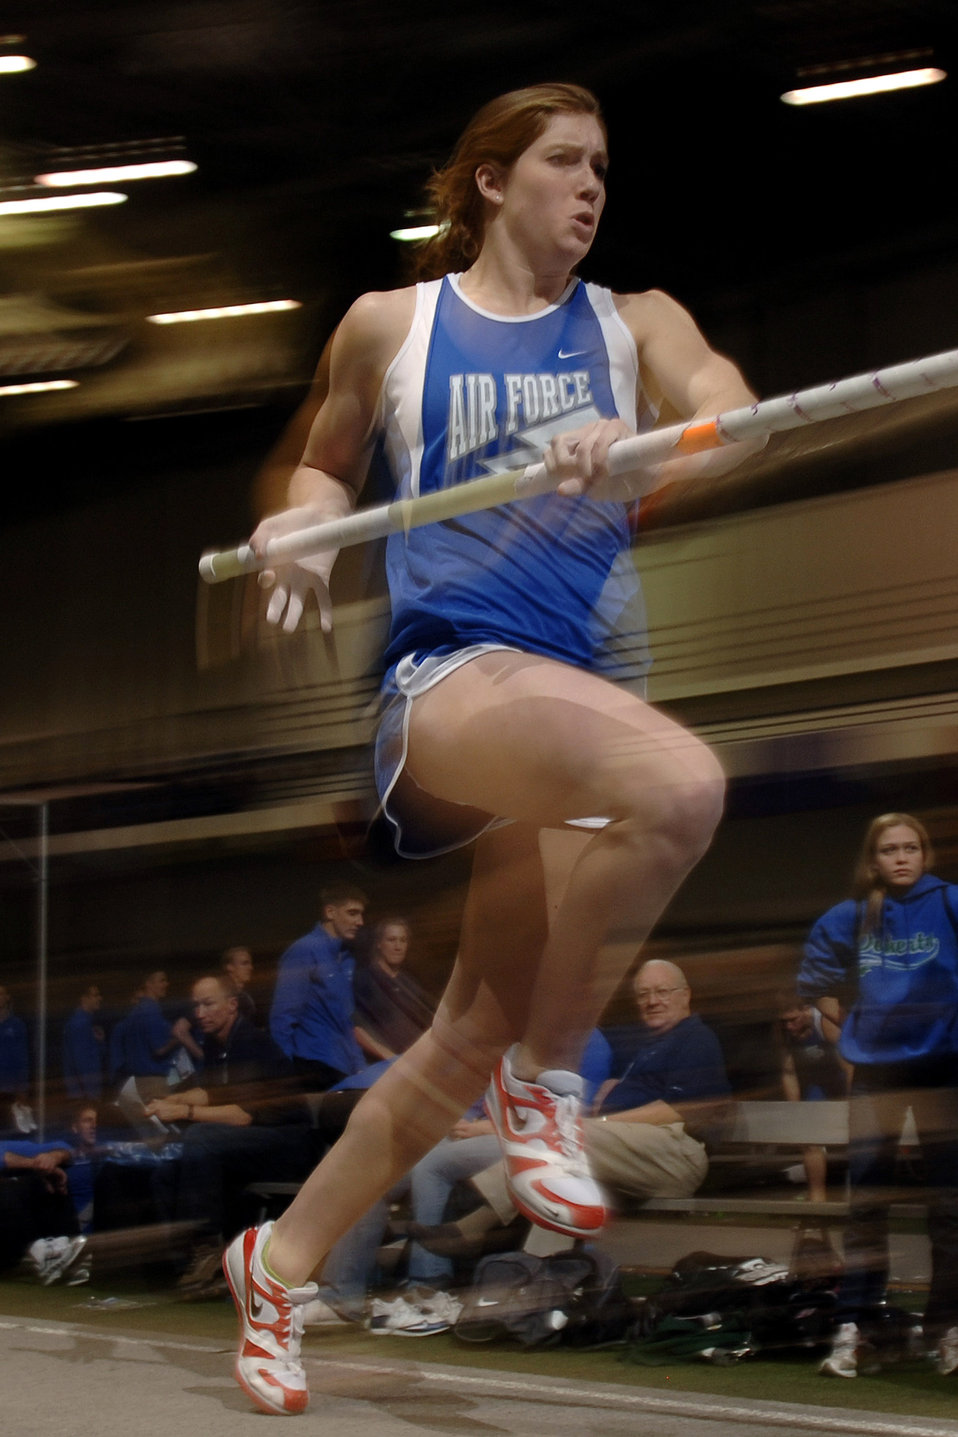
Down the runway I go

U.S. Air Force Academy Falcon sophomore Melissa Beerse speeds down the runway in the women's pole vault competition during the Air Force All-Comers Meet held Jan. 13 in the Cadet Field House at Colorado Springs, Colo. Beerse won the event, clearing a height of 12 feet 5 1/2 inches. That height matches the Academy record, which she set one week earlier.